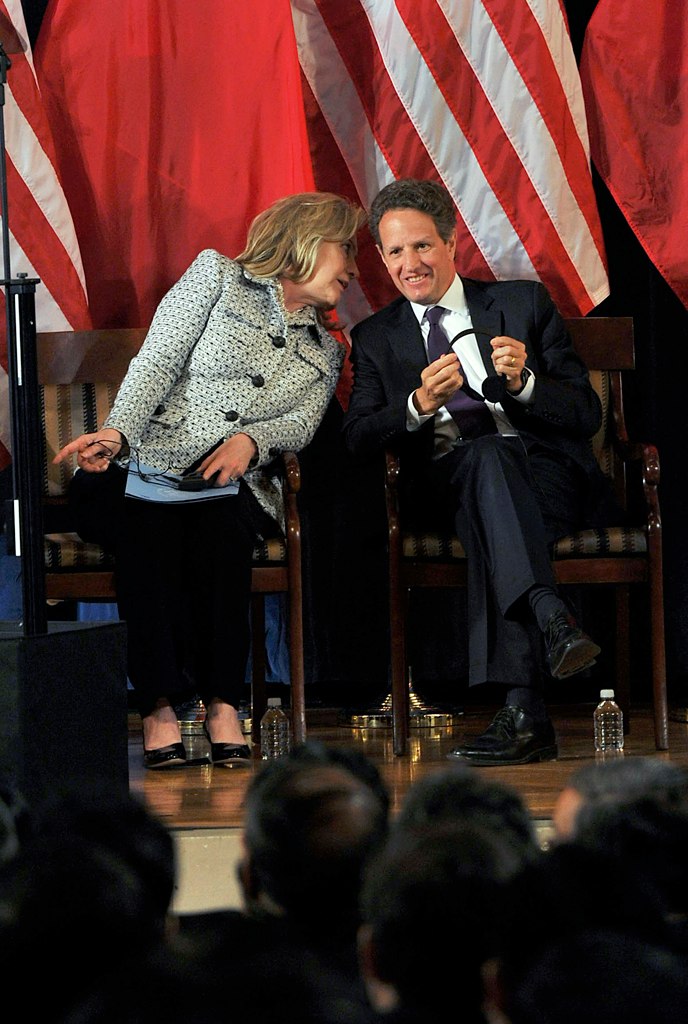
U.S.-China Strategic and Economic Dialogue

Secretary of State Hillary Rodham Clinton and Secretary of the Treasury Tim Geithner hosted the third joint meeting of the U.S.-China Strategic and Economic Dialogue (S&ED) in Washington, D.C. from May 9-10, 2011.